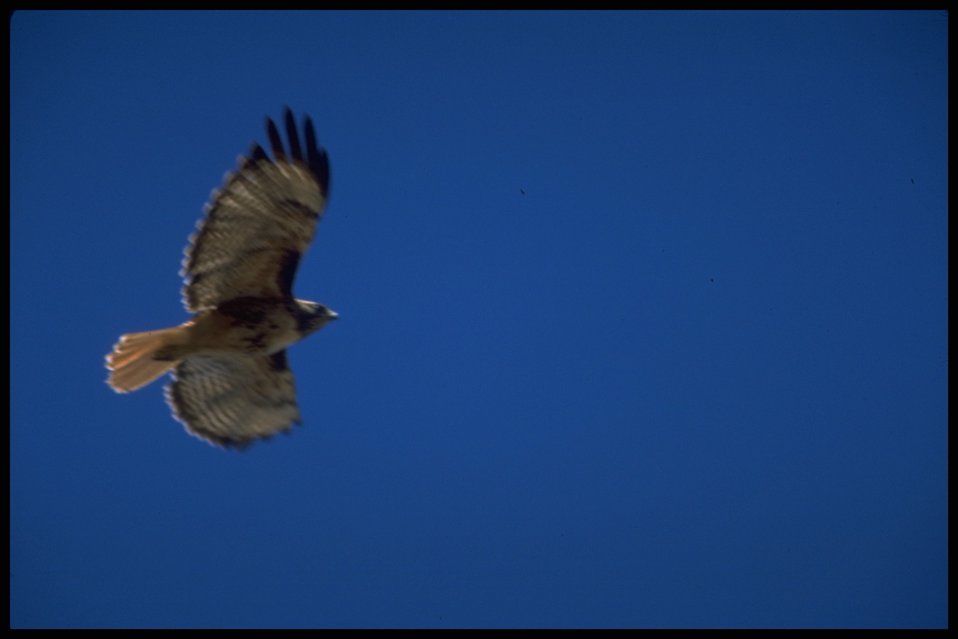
Red Tailed Hawk in flight, Lakeview District.